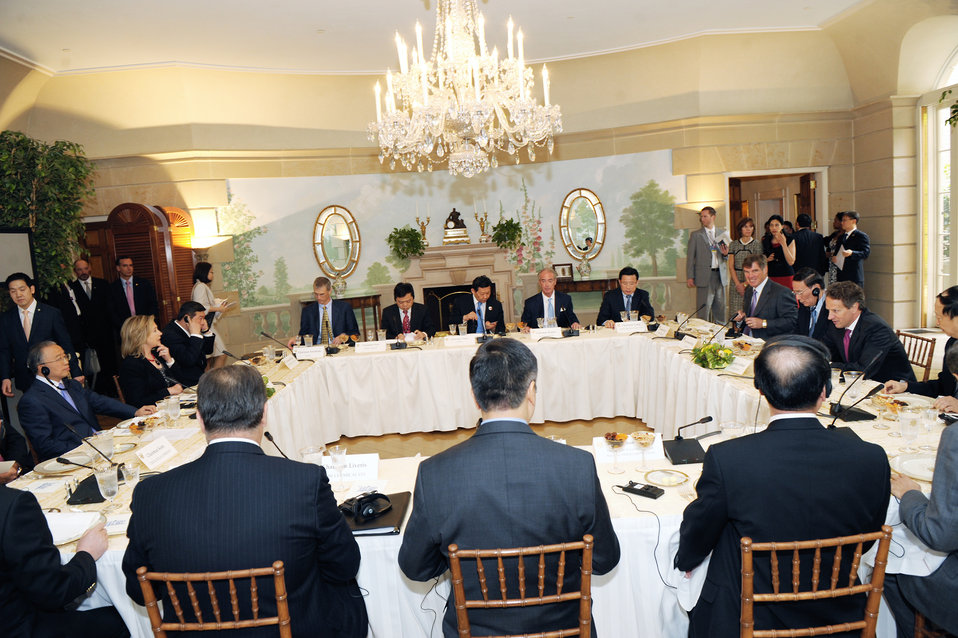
Secretaries Clinton and Geithner Co-Host a Luncheon

U.S. Secretary of State Hillary Rodham Clinton and U.S. Secretary of the Treasury Timothy Geithner co-host a luncheon with Chinese Vice Premier Wang, Chinese State Councilor Dai, and U.S. and Chinese business leaders, at the Blair House in Washington, D.C., on May 10, 2011.